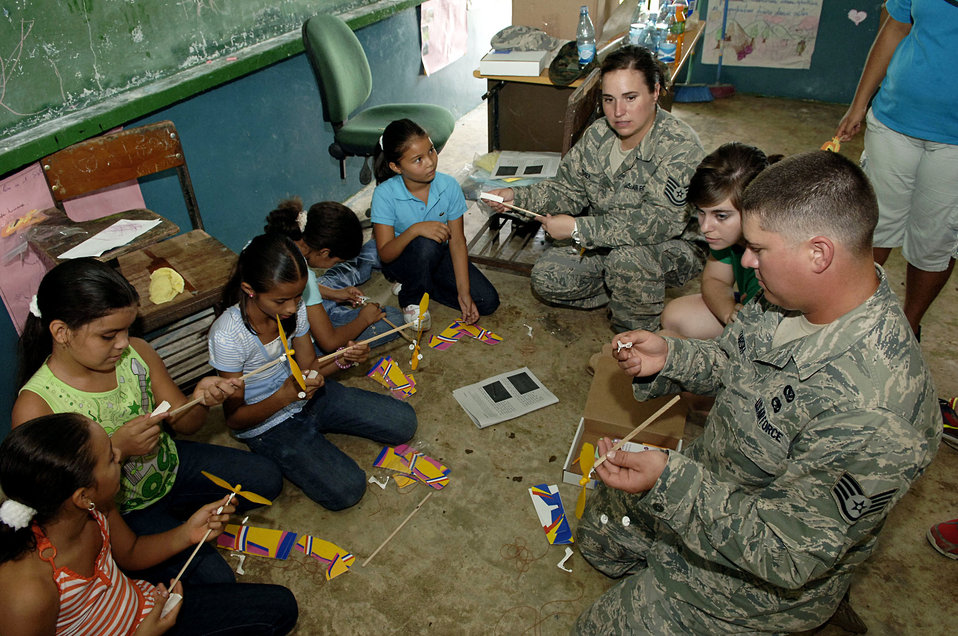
New Horizons Airmen spend day at Panamanian school

Tech. Sgt. Dorothy Lanthier and Staff Sgt. Josh Lazarski help children assemble rubber-band airplanes July 12, 2010, at the Sansonsito School in Panama. Sergeants Lanthier and Lazarski are assigned to 820th Expeditionary RED HORSE Squadron.